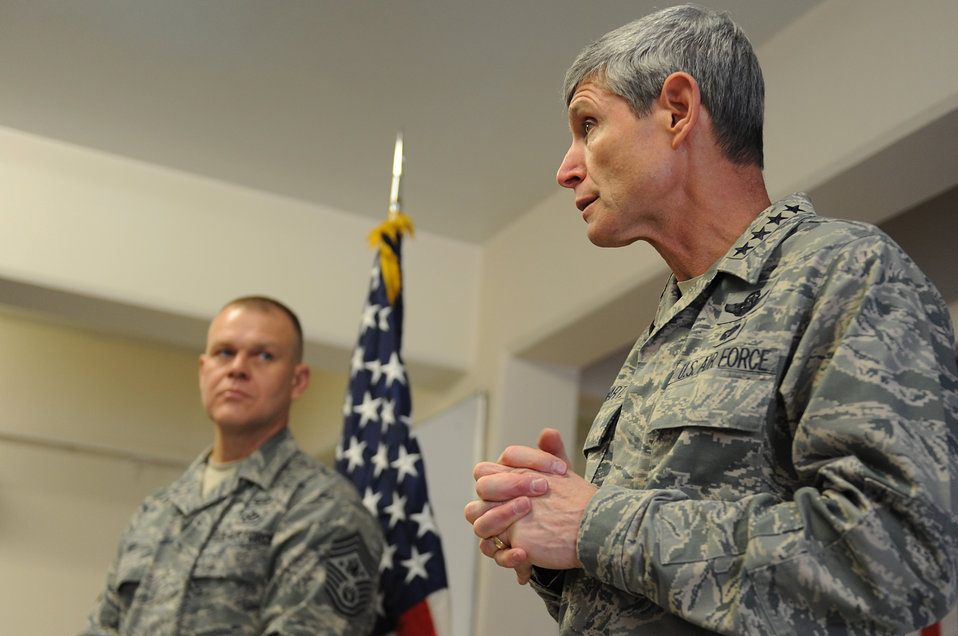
Thanksgiving Day visit

Air Force Chief of Staff Gen. Norton Schwartz and Chief Master Sgt. of the Air Force James A. Roy visit with Airmen at Camp Eggers, Afghanistan, Nov. 26, 2009. Gen. Schwartz and Chief Roy joined deployed Airmen assigned to the NATO Training Mission - Afghanistan and Combined Air Power Transition Force for Thanksgiving.